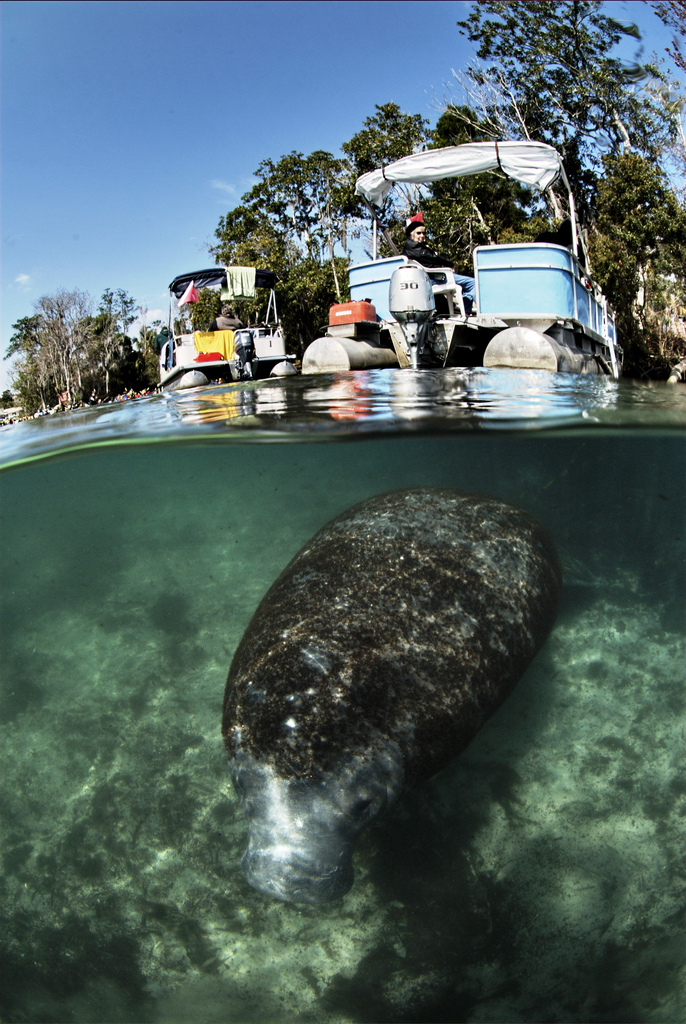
Endangered Florida manatee (Trichechus manatus)

Photo credit: David Hinkel

The Crystal River National Wildlife Refuge, was established in 1983 specifically for the protection of the endangered West Indian Manatee. This unique refuge preserves the last unspoiled and undeveloped habitat in Kings Bay, which forms the headwaters of the Crystal River. The refuge preserves the warm water spring havens, which provide critical habitat for the manatee populations that migrate here each winter.